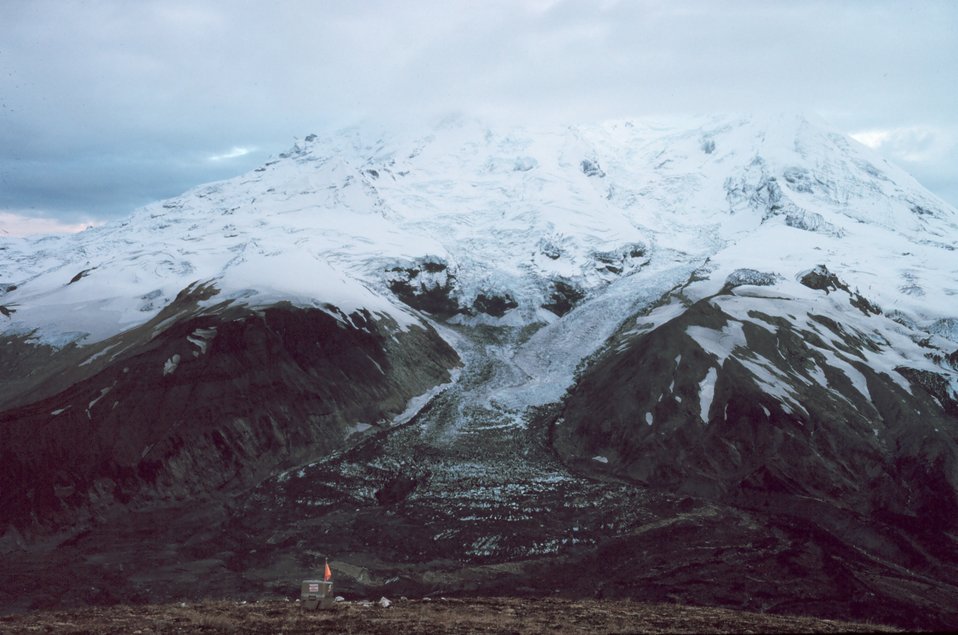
Survey work on the Alaska Peninsula. Note the dirt covered glacier across the valley.